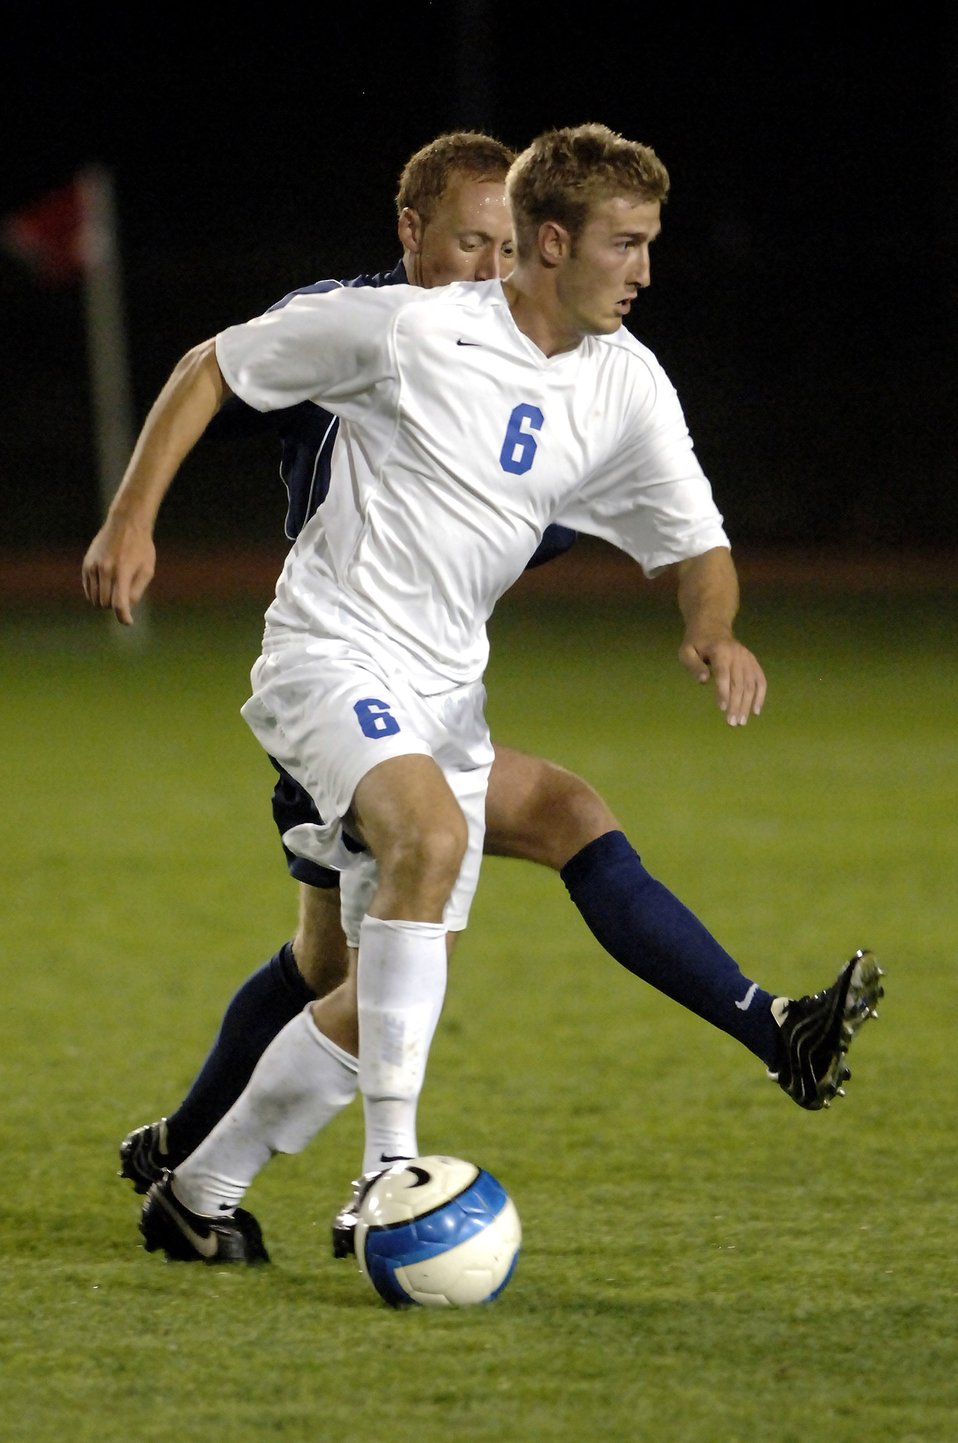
Academy soccer

Cadet 1st Class Ian Hauck battles for control of the ball during a men's exhibition soccer match Aug. 25 against Metropolitan State College of Denver at the U.S. Air Force Academy in Colorado Springs, Colo.